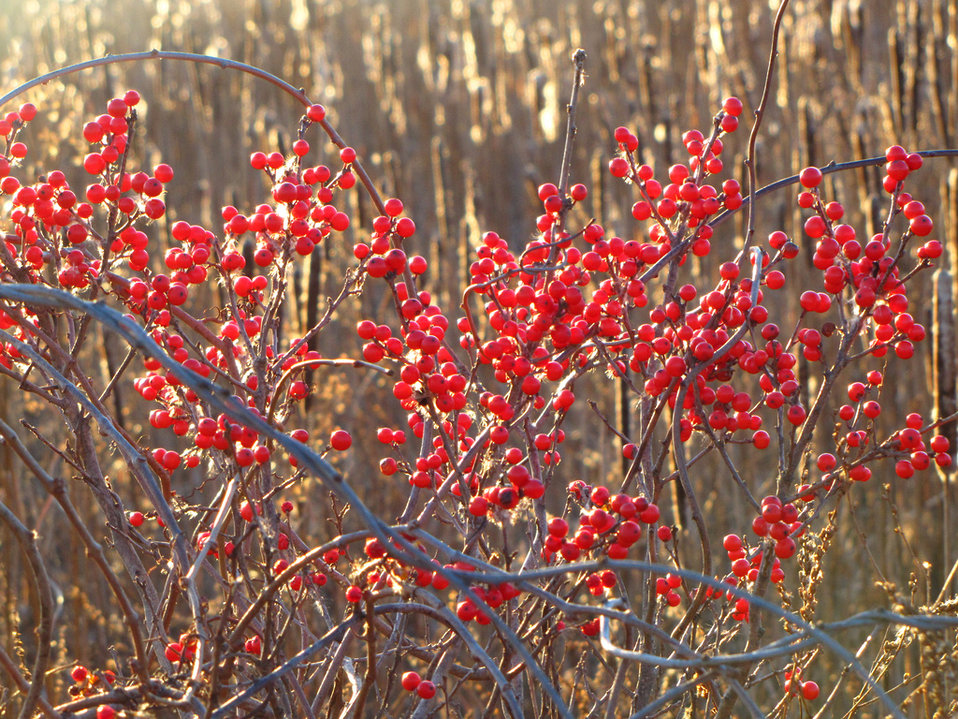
reds of winter

Parker River National Wildlife Refuge, MA